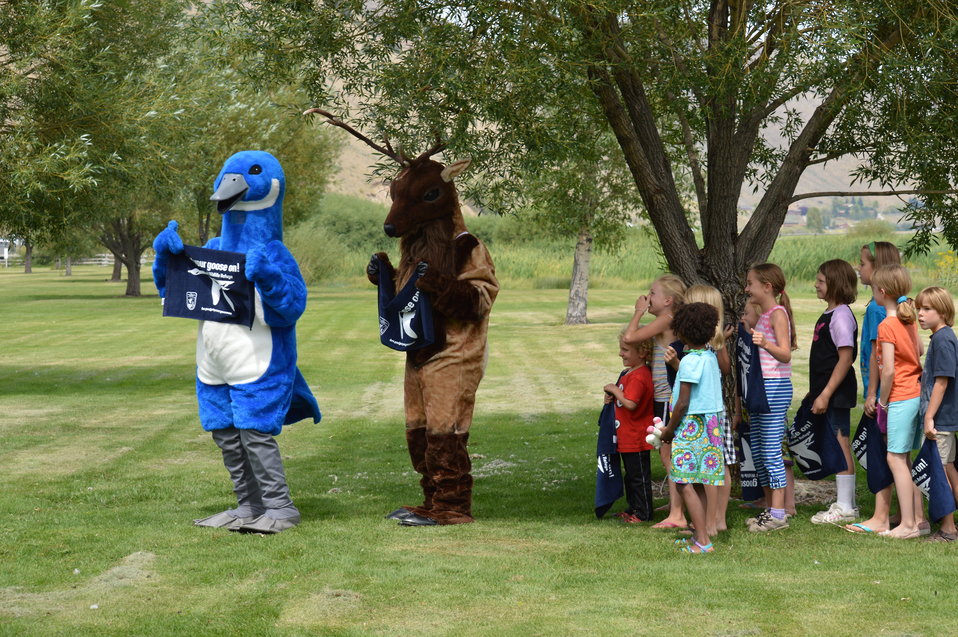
Get Your Goose On! - National Elk Refuge Style

On August 10, 2012 the U.S. Fish and Wildlife Service and Partners celebrated the 100 year anniversary of the establishment of the National Elk Refuge. In these photos, young attendees, along with Puddles the Blue Goose and the National Elk Refuge's mascot, showed us how to Get Your Goose On! with style.